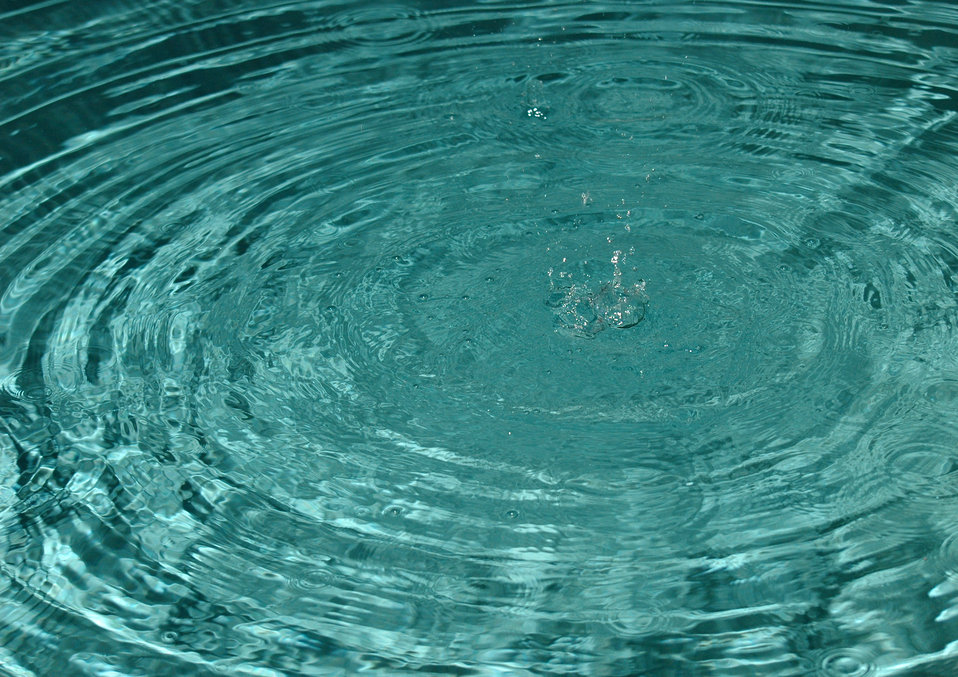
Blue water drops

Rain drops in a pool of blue water..